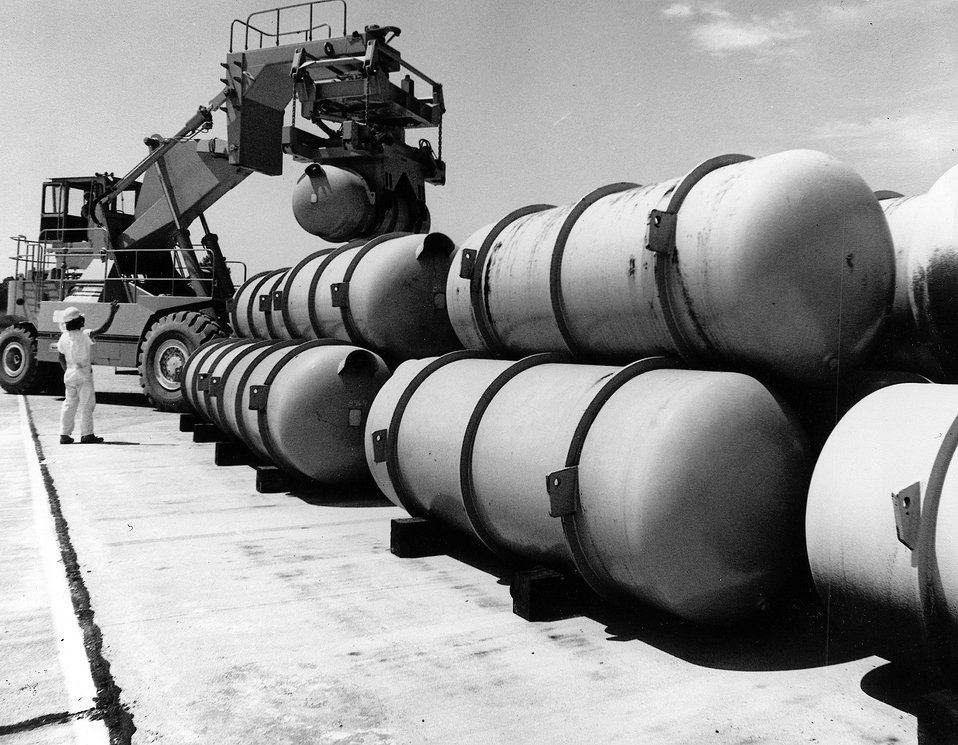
OAK RIDGE, TENNESSEE...Uranium enrichment through gaseous diffusion. The large tanks weigh 10 tons and contain feed material, uranium hexaflouride, for the enrichment process carried out in the ERDA's gaseous diffusion plants at Oak Ridge, Tennessee; Puducah, Kentucky and Portsmouth, Ohio. Circa 1977.